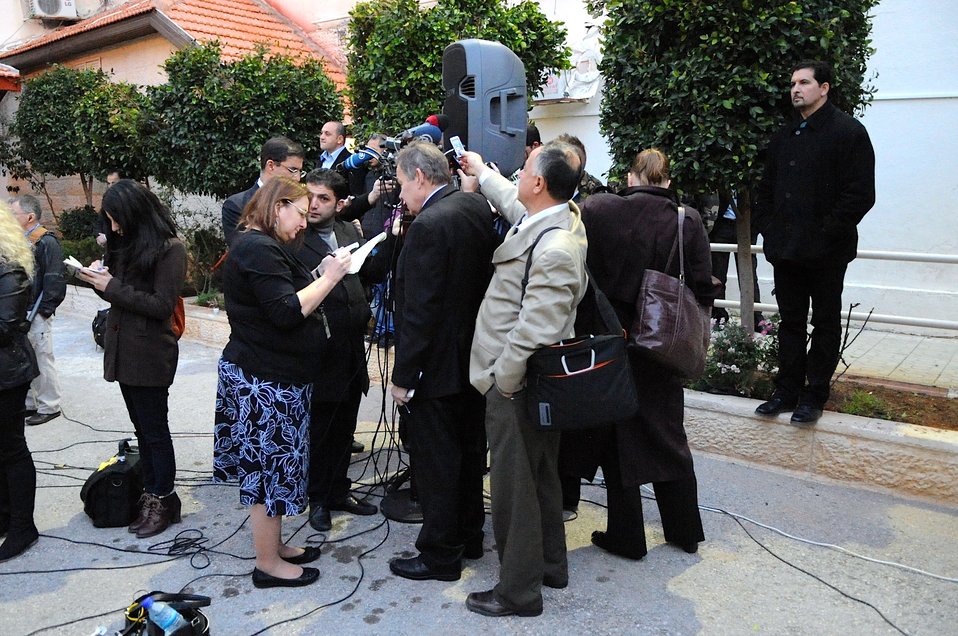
Reporters Cluster to Record Statements by Secretary Kerry, Palestinian Negotiator Erekat

U.S. and local reporters cluster around a speaker as they record statements made by U.S. Secretary of State John Kerry and Palestinian Authority Lead Negotiator Saeb Erekat following a meeting focused on Middle East peace at the Muqata'a Presidential Compound in Ramallah, West Bank, on January 4, 2013.